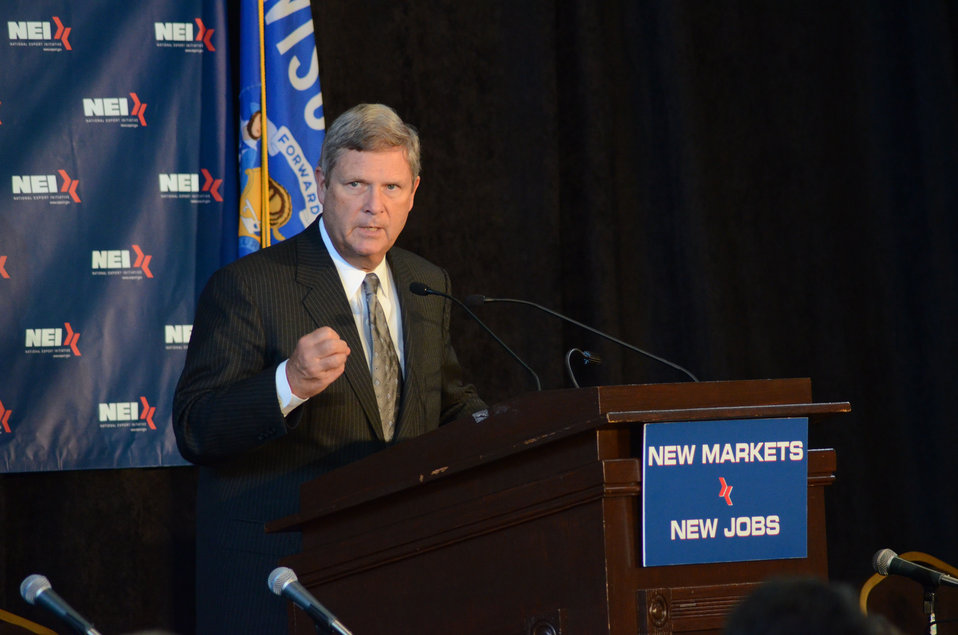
Agriculture Secretary Tom Vilsack speaks at the National Export Initiative (NEI) Small Business Tour in Milwaukee, WI, on Wednesday, August 3, 2011. An important goal of the NEI is to provide additional assistance to small and medium-sized businesses, which are major drivers of job creation. The NEI is assisting small and medium-sized businesses win more foreign government contracts, find buyers worldwide, participate in more trade missions and trade shows, receive more export financing, and learn new ways to sell products and services overseas.